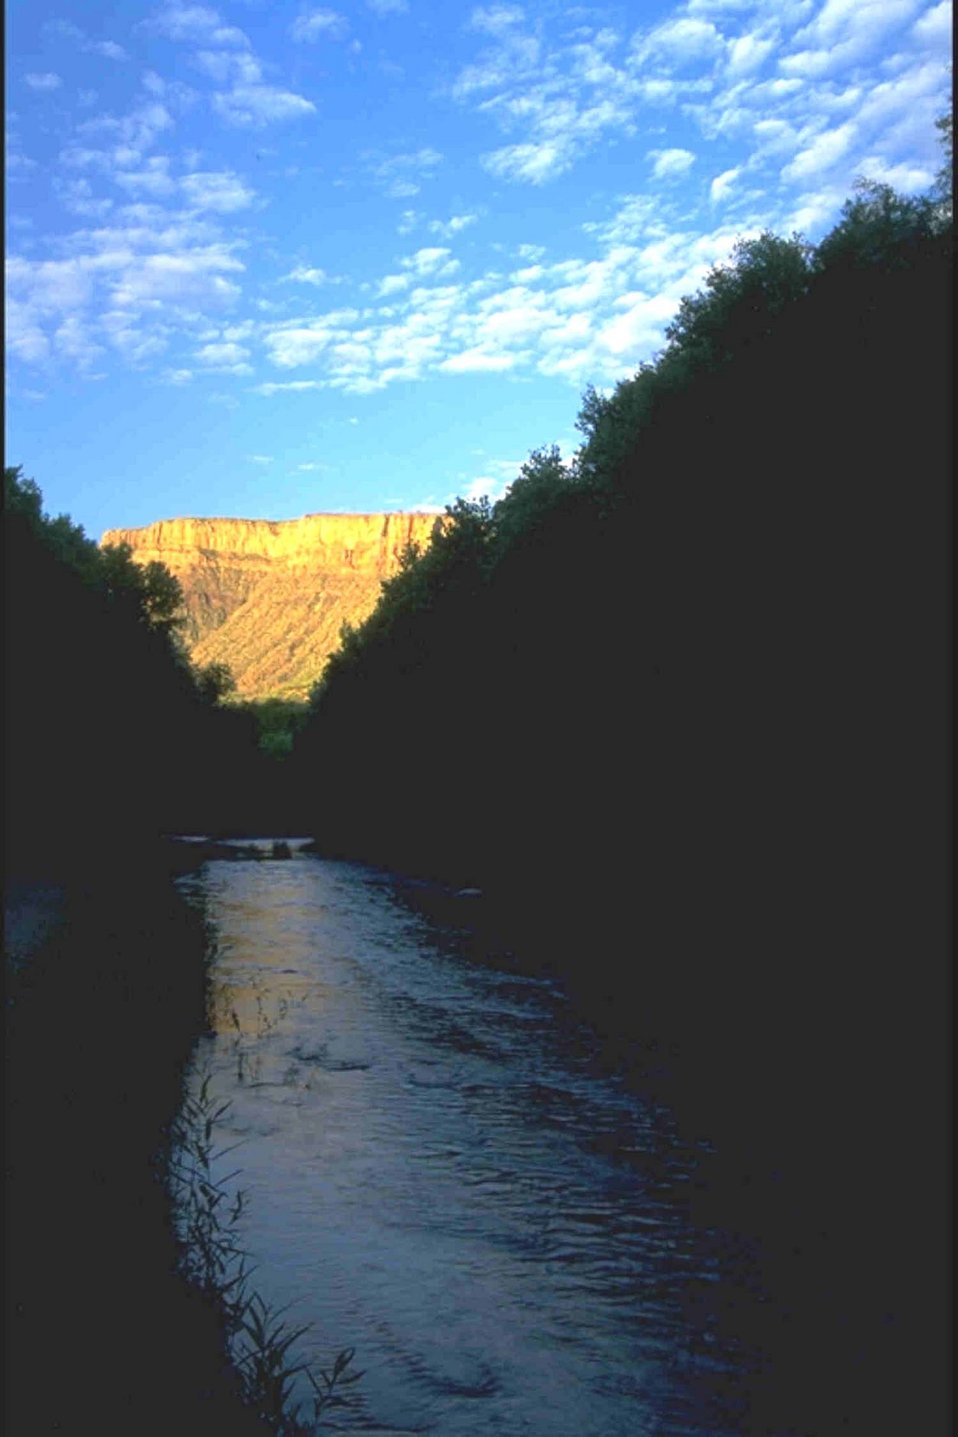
Early summer morning near the west trailhead.